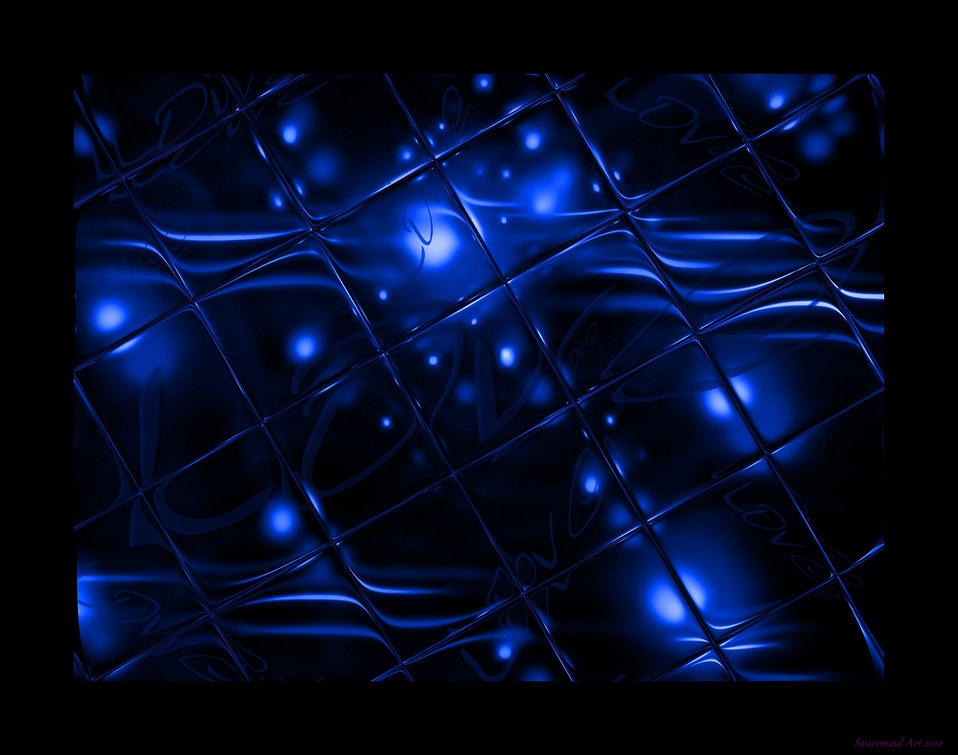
Picture of love in blue

Declaration of love.